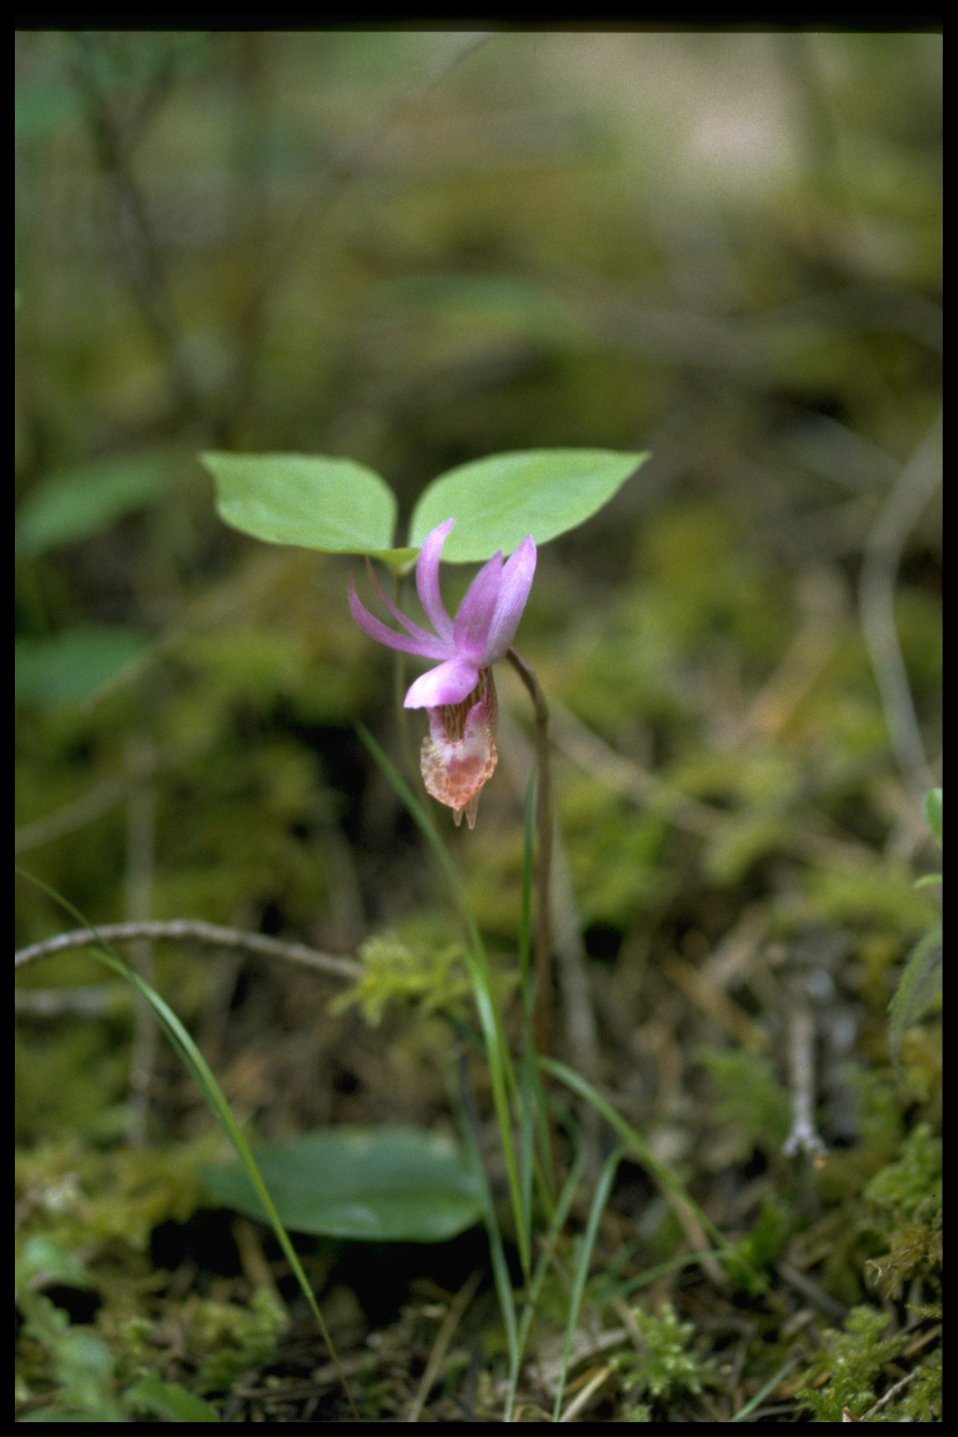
Medium shot of Calypso bulbosa.